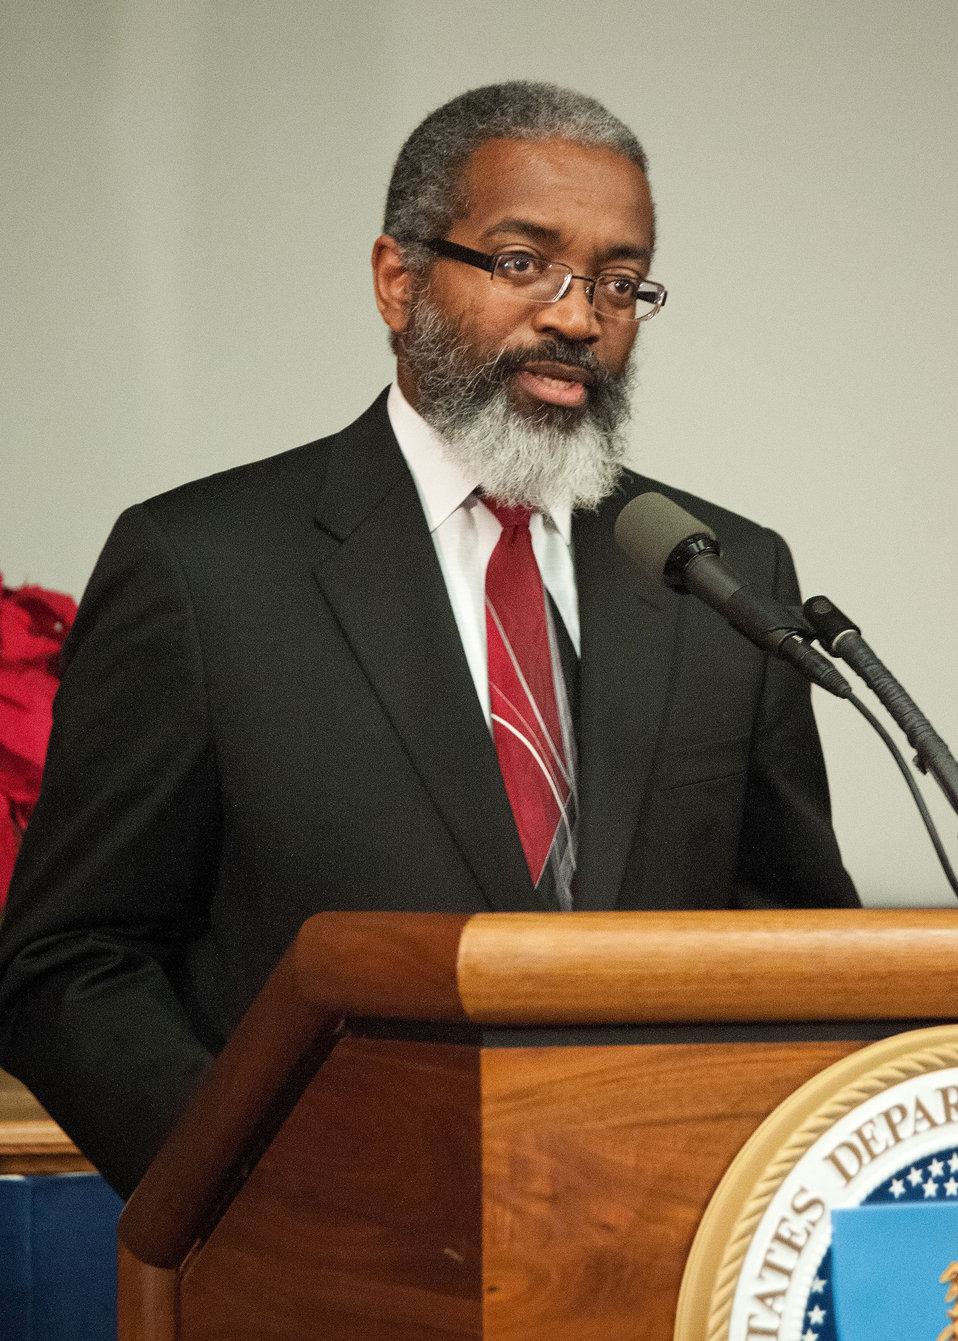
Agriculture Acting Assistant Secretary for Administration Dr. Gregory Parham offers closing remarks at the U.S. Department of Agriculture’s (USDA) Fourth Annual Cultural Transformation event held in Washington, D.C. on Tuesday, Dec. 4, 2012. The theme for the event “Faces of Cultural Transformation” Focusing on changing the way we serve our customers and cultural transformation’s benefits to employees.